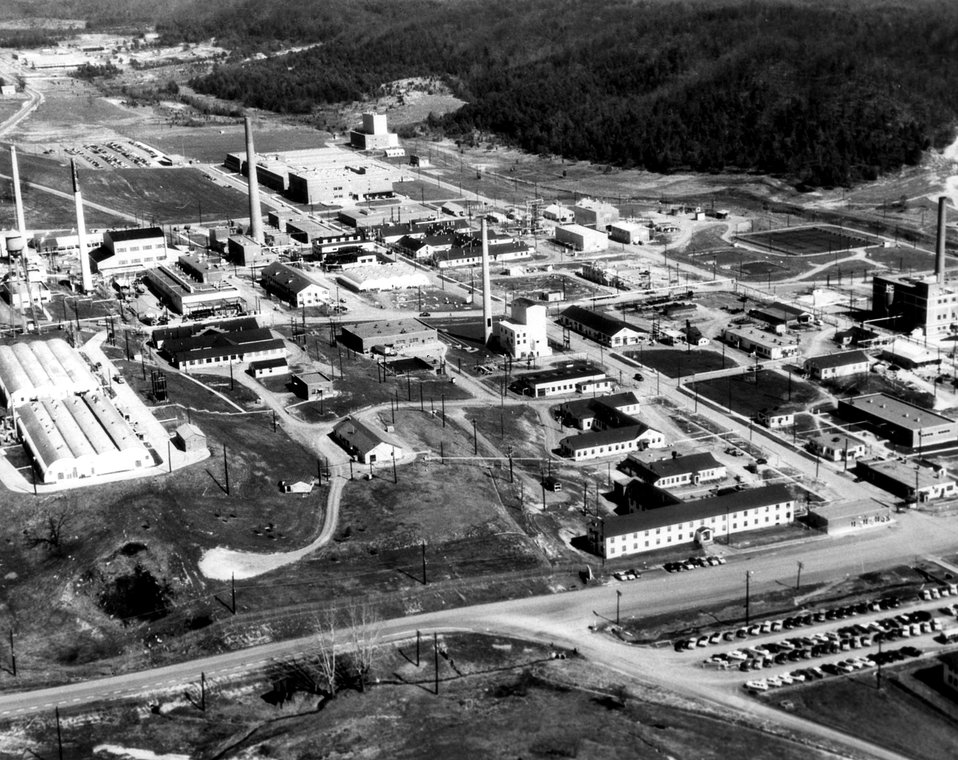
Oak Ridge National Laboratory. c. 1956